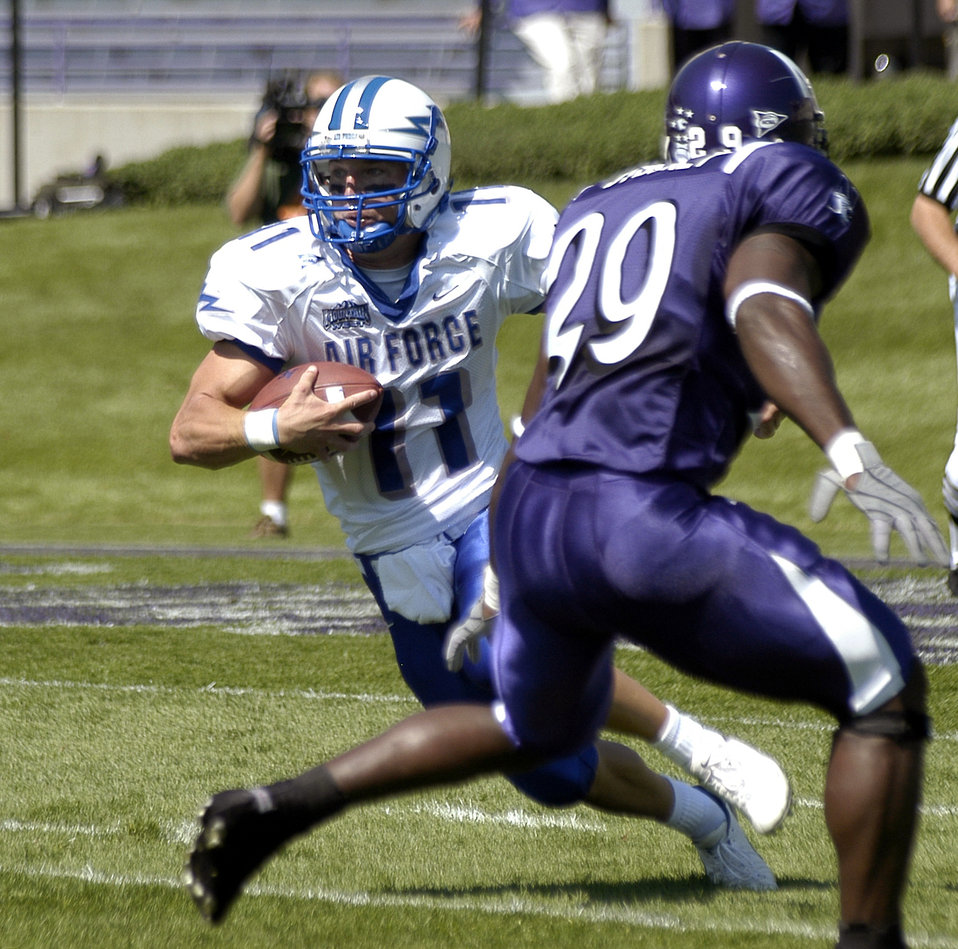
What are my options?

EVANSTON, Ill. -- Air Force Academy Falcon quarterback Chance Harridge cuts upfield on an option play to gain some yardage. The academy beat Northwestern, 22-21.